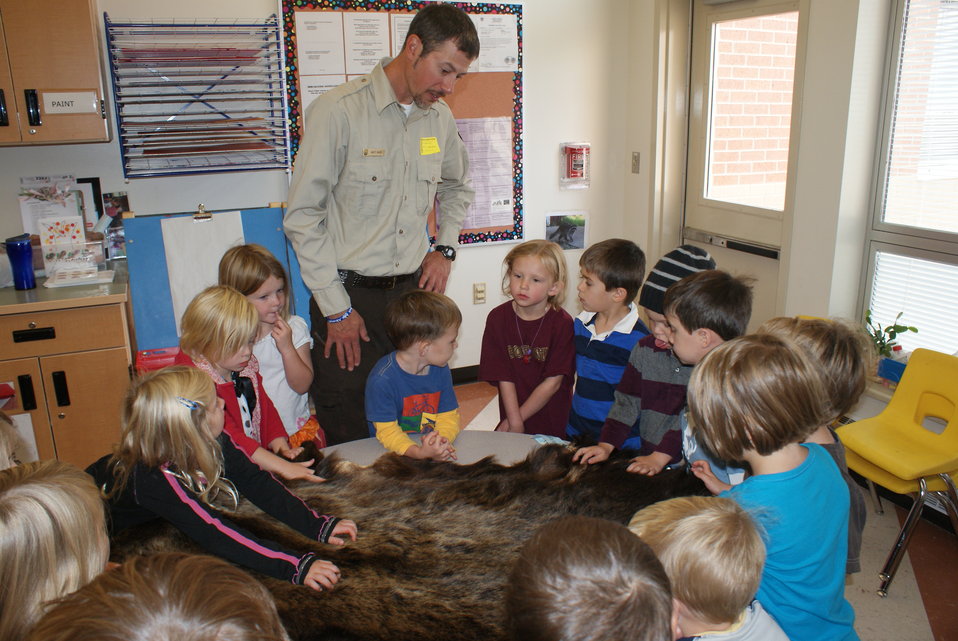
Scientists in the Community Program

U.S. Fish and Wildlife Service Mountain-Prairie Region Deputy ARD for External Affairs, Matt Kales, introduces early childhood education students at William Roberts Elementary School in Denver to some of Colorado's native and historic wildlife species.